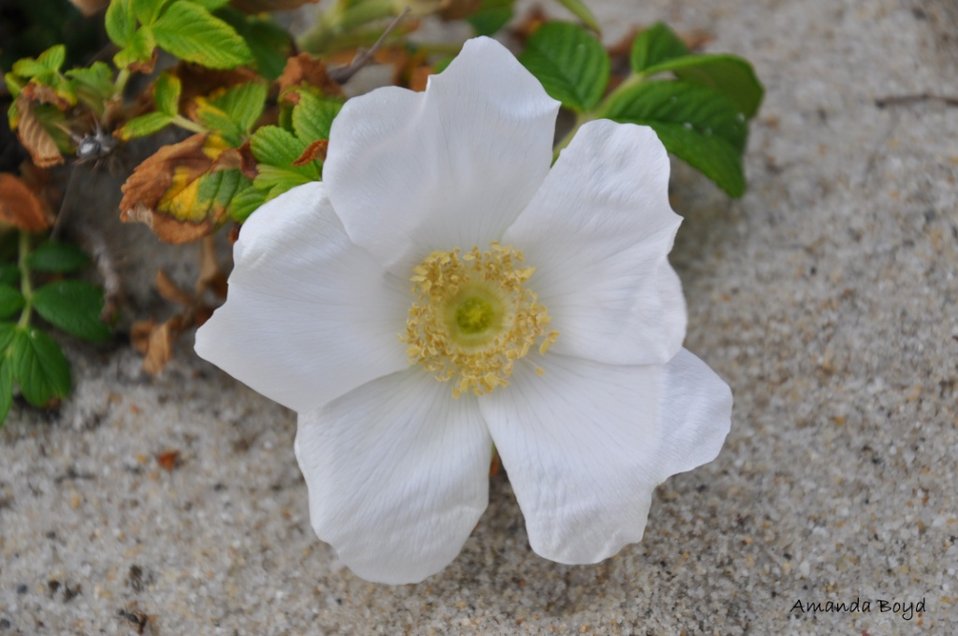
salt spray rose

Nantucket National Wildlife Refuge